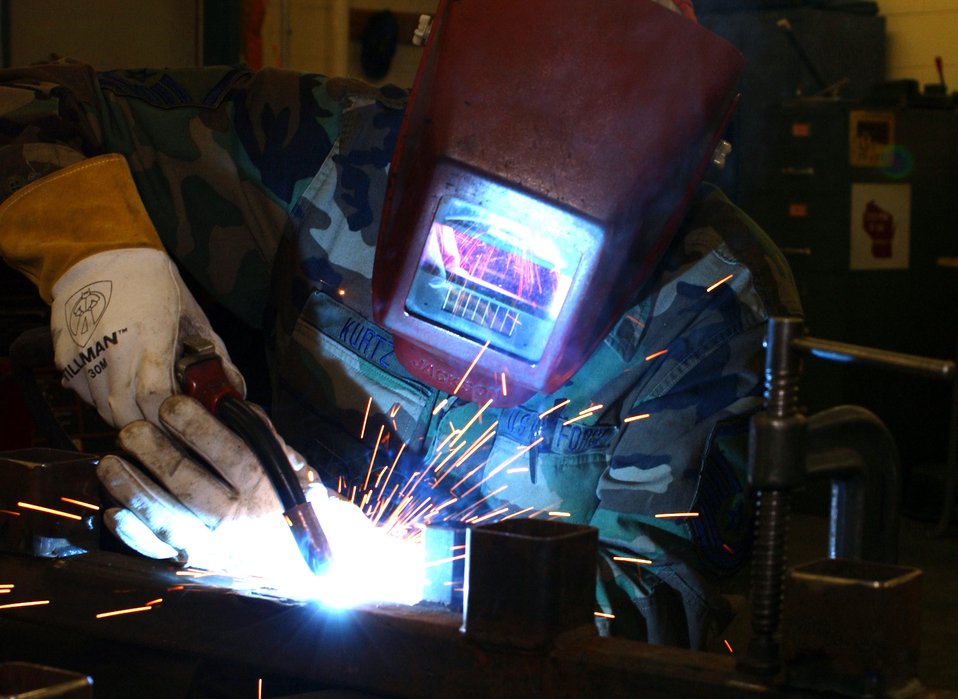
Guard weld

TRUAX FIELD, Wis. -- Master Sgt. Gary Kurts uses a MIG welder to construct an engine rack during a unit training assembly here March 5. He is a member of the Wisconsin Air National Guard's 115 Fighter Wing Maintenance Squadron.